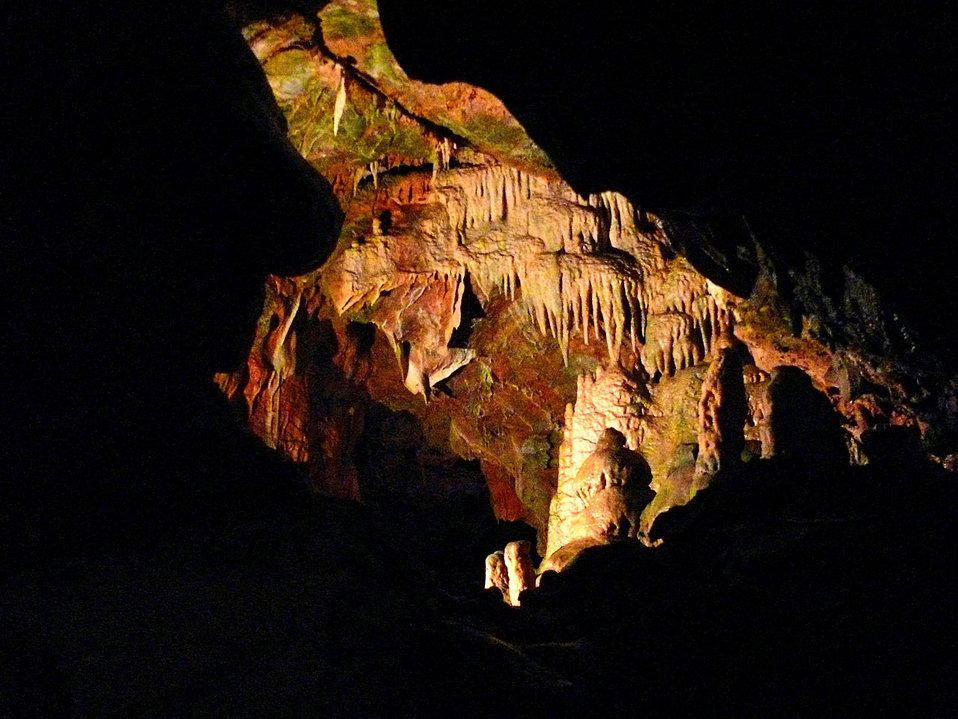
Kents cavern

Cave in torquay.